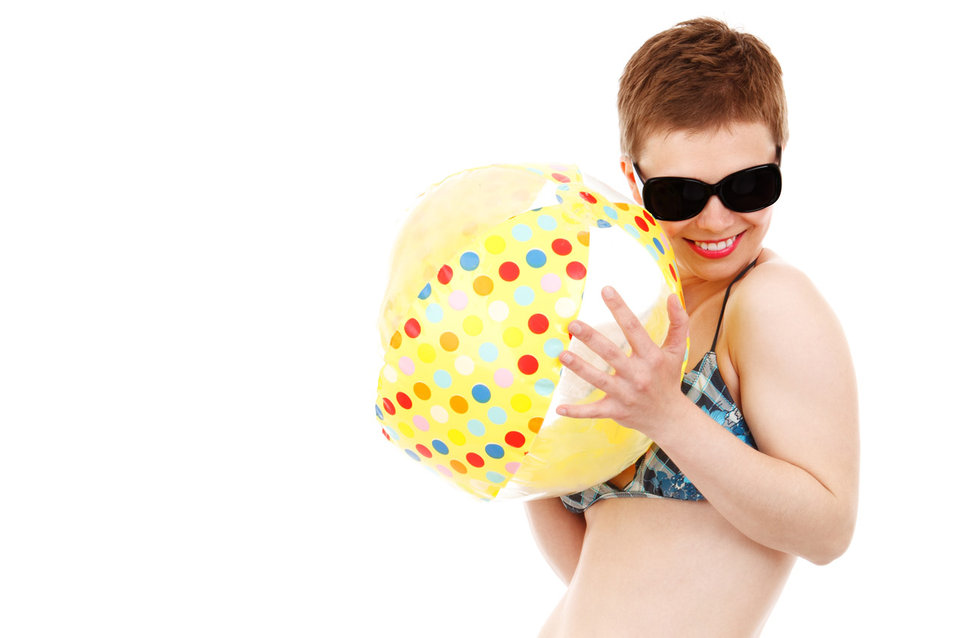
Having fun with beach ball

Young woman in bikini with a beach ball and sunglasses isolated on white background.